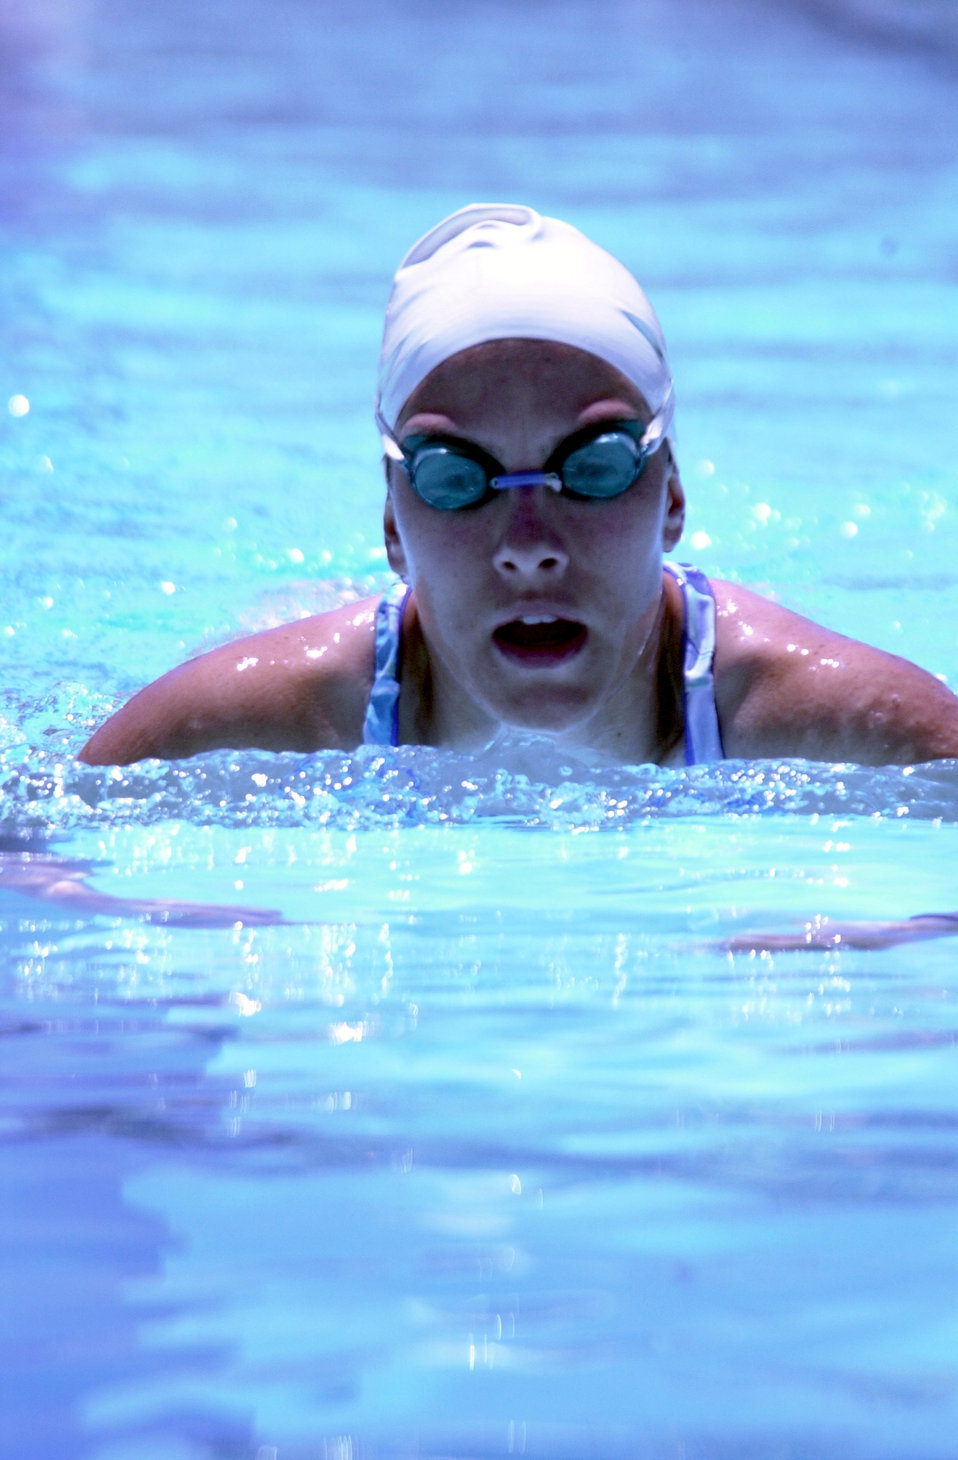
Swimmercizing

TRAVIS AIR FORCE BASE, Calif. -- Capt. Beth Murchison gets her exercise as she swims at the pool here. She is a KC-10 Extender pilot assigned to the 9th Air Refueling Squadron.